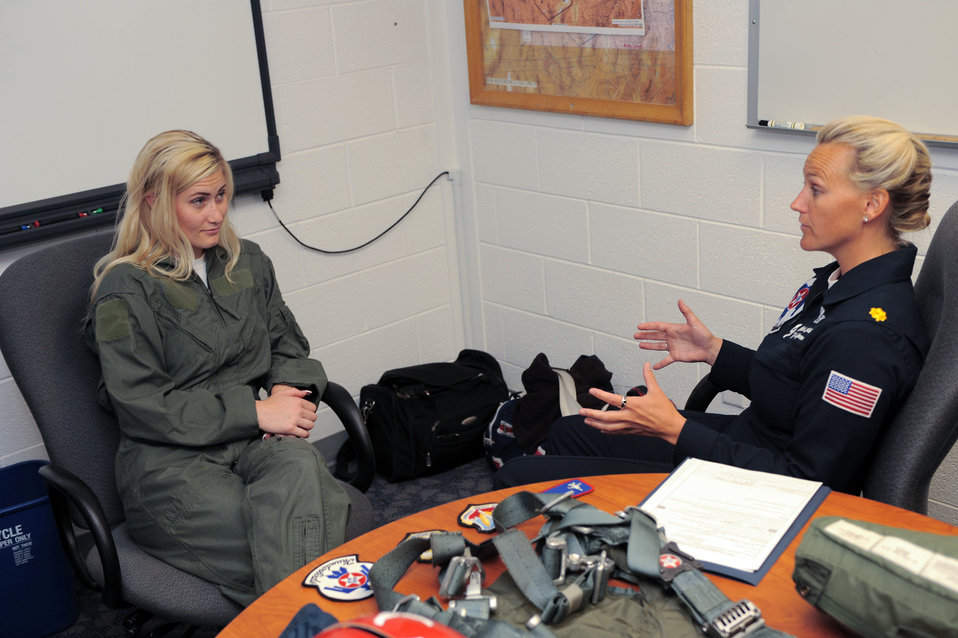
Hometown Hero

Megan Funk, a second grade teacher at Majestic Elementary School in Ogden, Utah, receives a medical screening June 4 from Maj. Charla Quayle, Air Force Thunderbird flight surgeon. Mrs. Funk received more than three hours of screening, training and briefings at Hill Air Force Base, Utah, before her Hometown Hero flight in a Thunderbird F-16 Fighting Falcon.